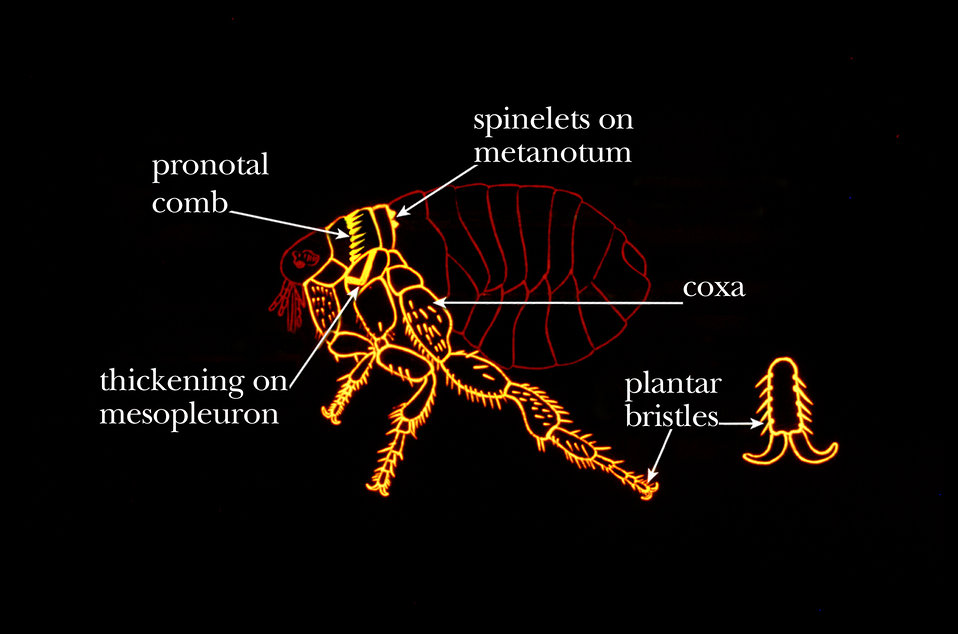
This illustration shows some common identifying characteristics found on the thorax of fleas.